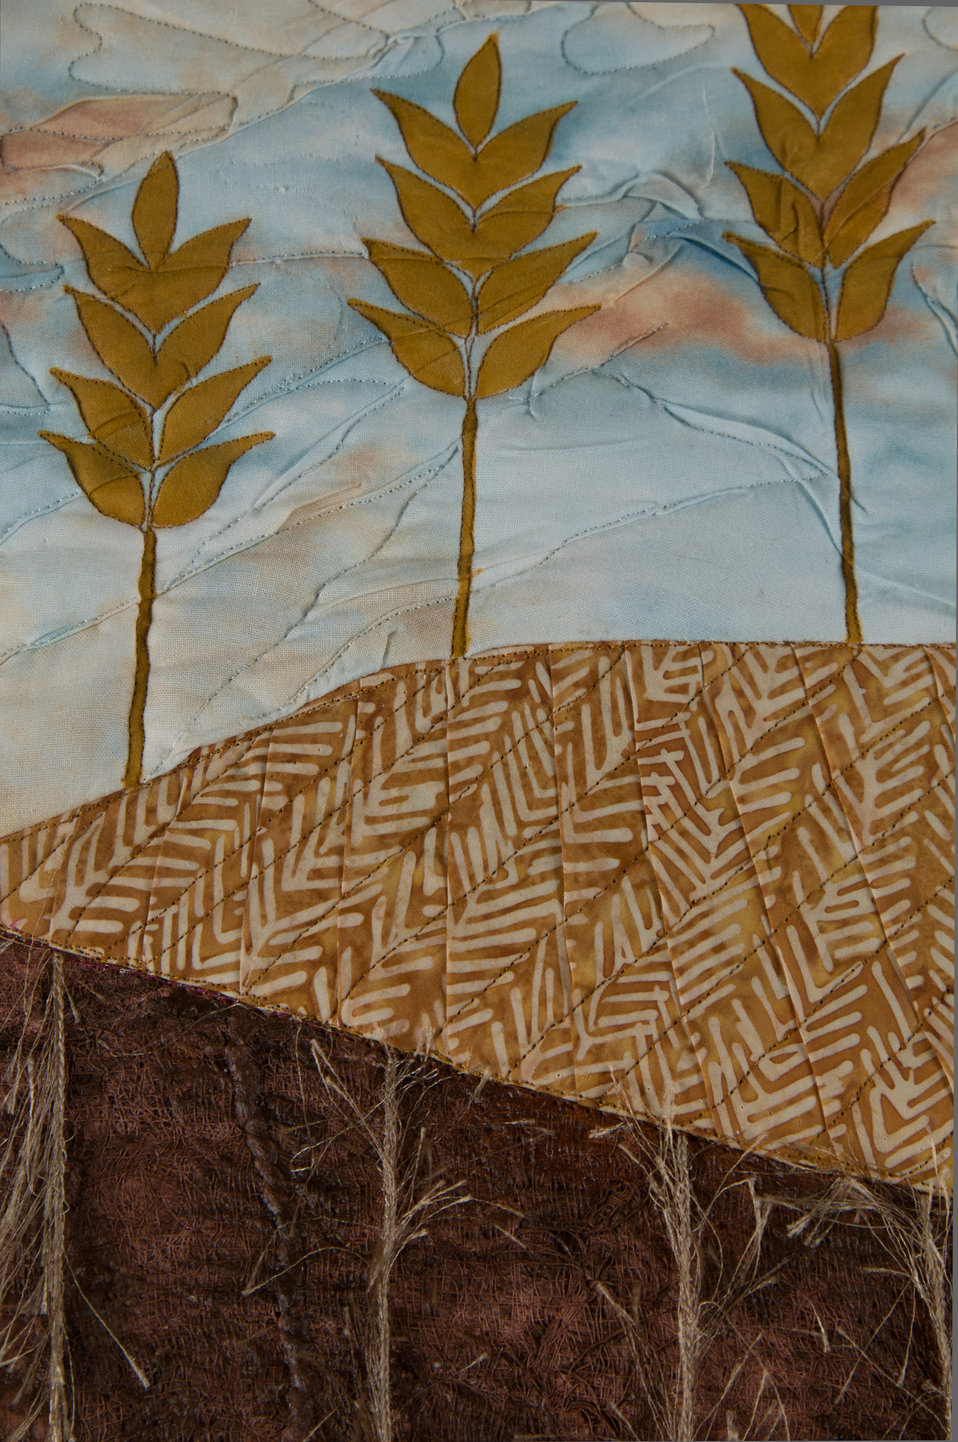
Online Viewer's Choice entries of the 2013 Art & Agriculture, Tuesday, July 9, 2013, in the South Building, Washington, D.C. Themes were expressed by employees from across the department and the contest was open to full-time and part-time USDA employees. Winning artwork will be displayed till the end of the year. U.S. Artistic expression is a creative outlet that is vital for an individual to grow and develop.